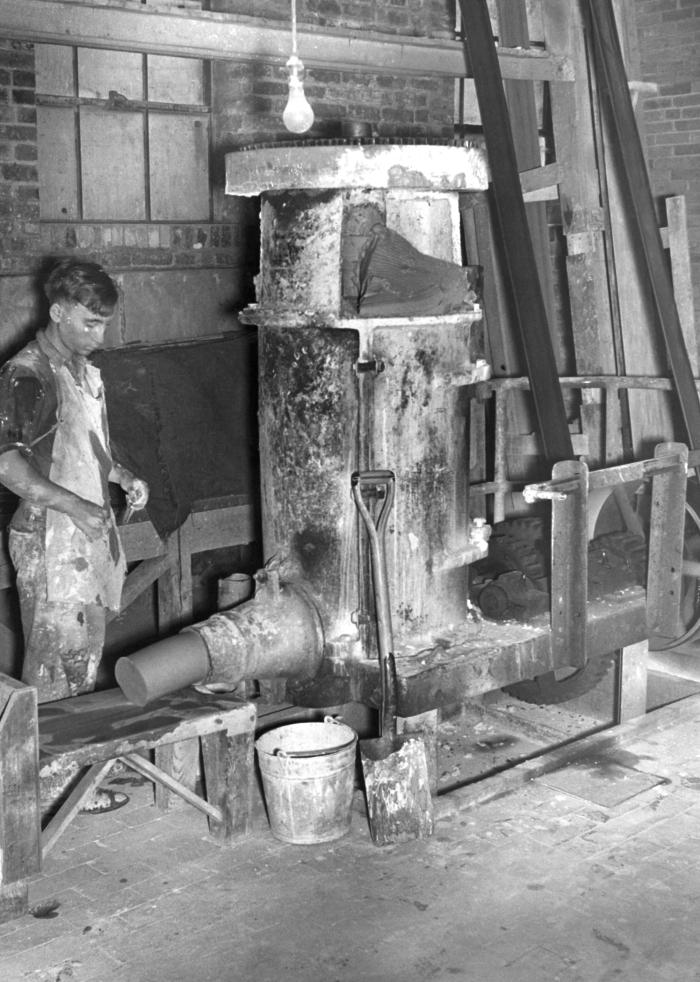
Provided by the Center for Disease Control's (CDC), National Institute for Occupational Safety and Health (NIOSH), this historic image depicted a male industrial worker who was inside a West Virginia tile-making factory stationed at a clay extrusion machine. Extrusion involved the application of pressure to the moist clay, however, spillover of moist debris that would dry, often released airborne silicate particles, especially during sweeping in and around his workstation. In so doing, these workers were prone to inhaling these particulates, which lead to the chronic pulmonary disease known as pneumoconiosis, or silicosis, or more commonly known as 'grinders' disease', characterized by the formation of nodular fibrotic changes in the lungs. Note that this man was not wearing a filtered breathing mask, thereby, increasing his chances of contracting silicosis. The image was published in the 'Public Health Bulletin', No. 244, 1939.